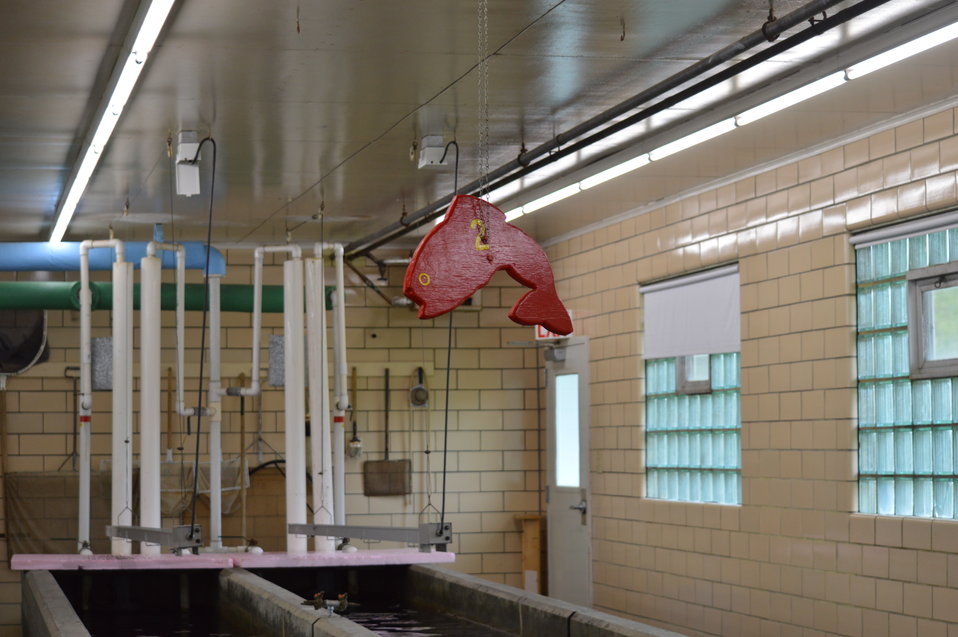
Raceways

Garrison Dam National Fish Hatchery in North Dakota.